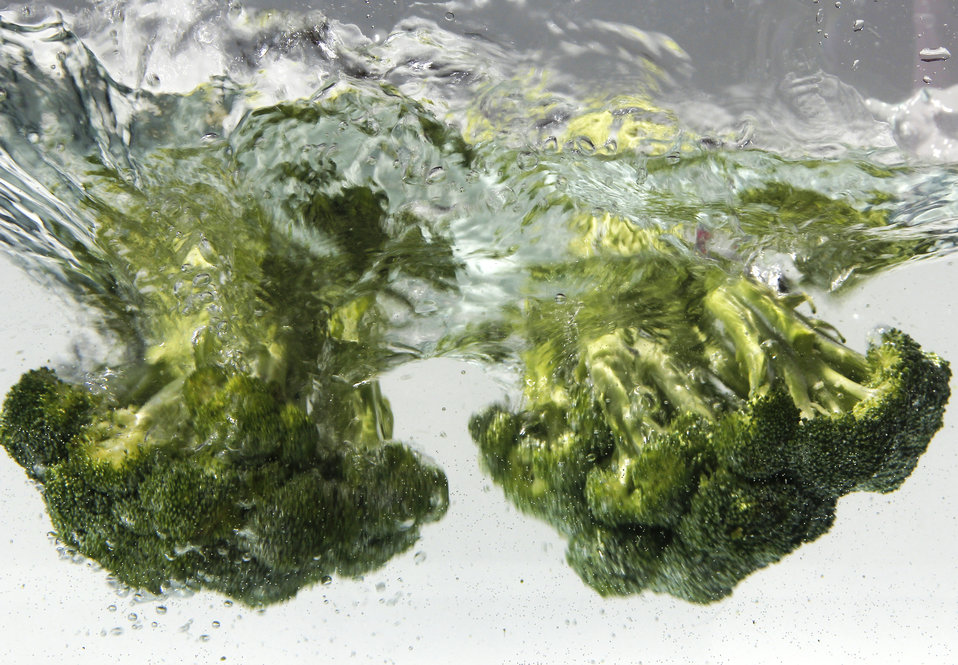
Dunked into a tub of clean water, these two fresh heads of green broccoli were undergoing a thorough cleansing prior to their addition to a healthy meal. Broccoli is a terrific source of vitamins A and C, as well as dietary fiber.